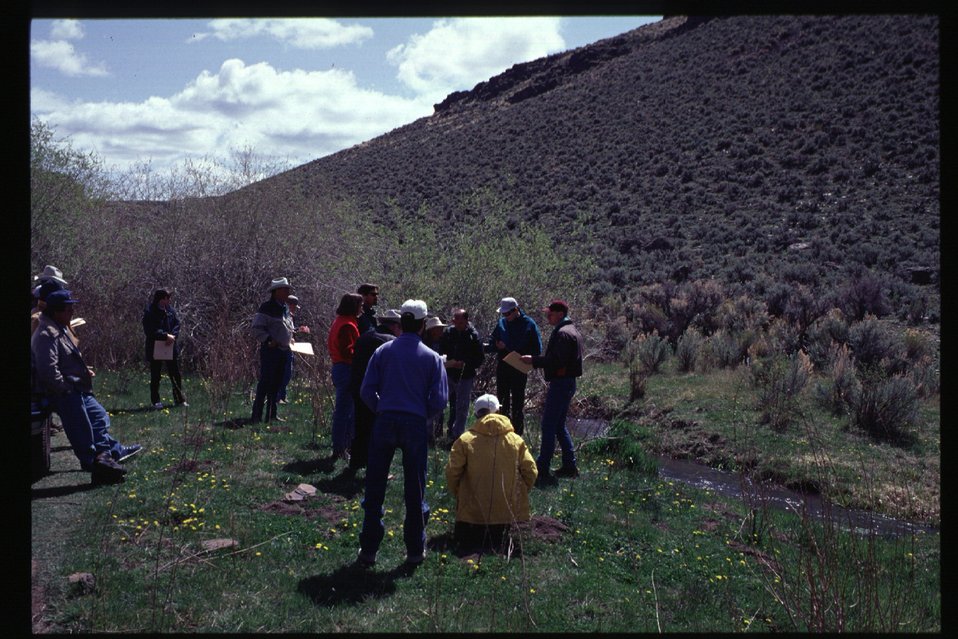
Riparian RACS Tour on Range Health Assessment Owyhee Field Office LSRD Lower Snake River District